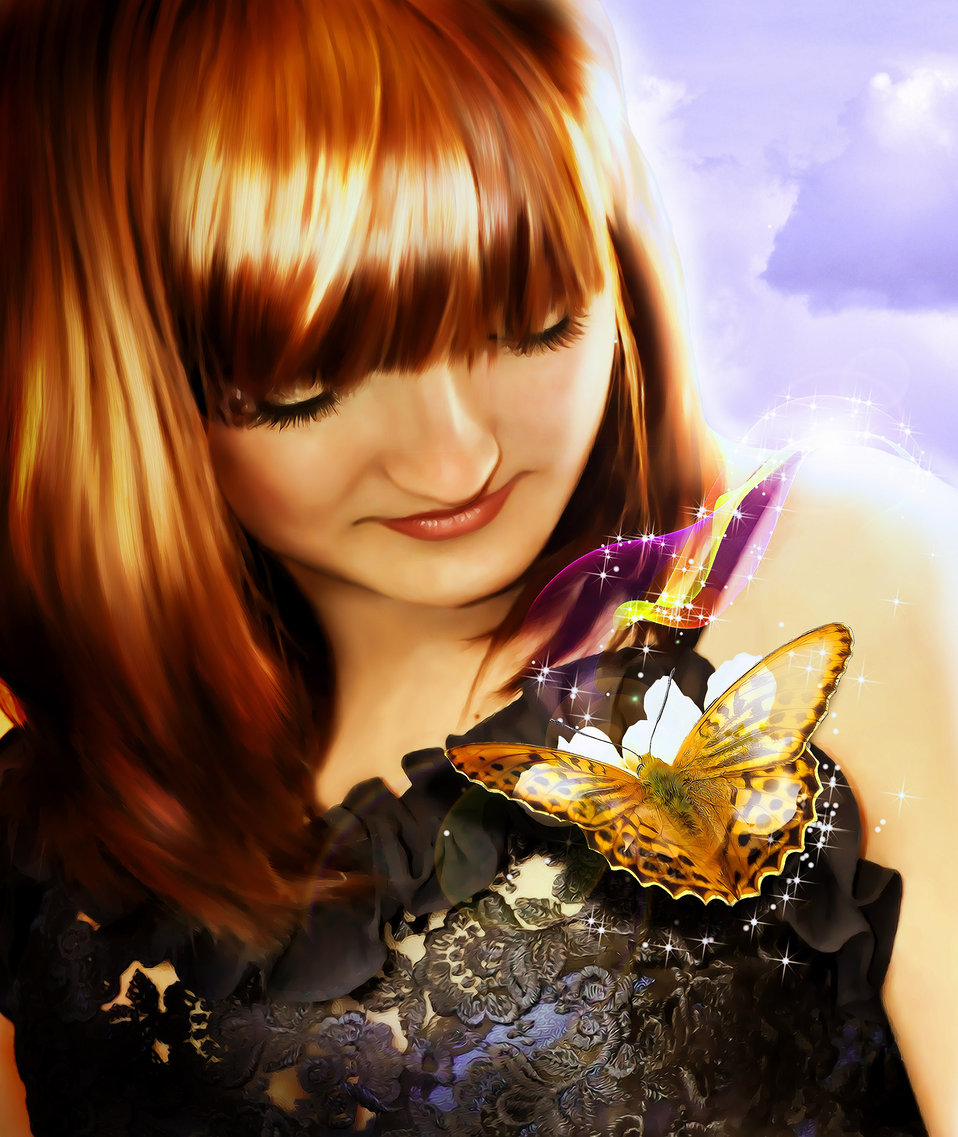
Magic

Artistic treatment of the portrait. young girl..